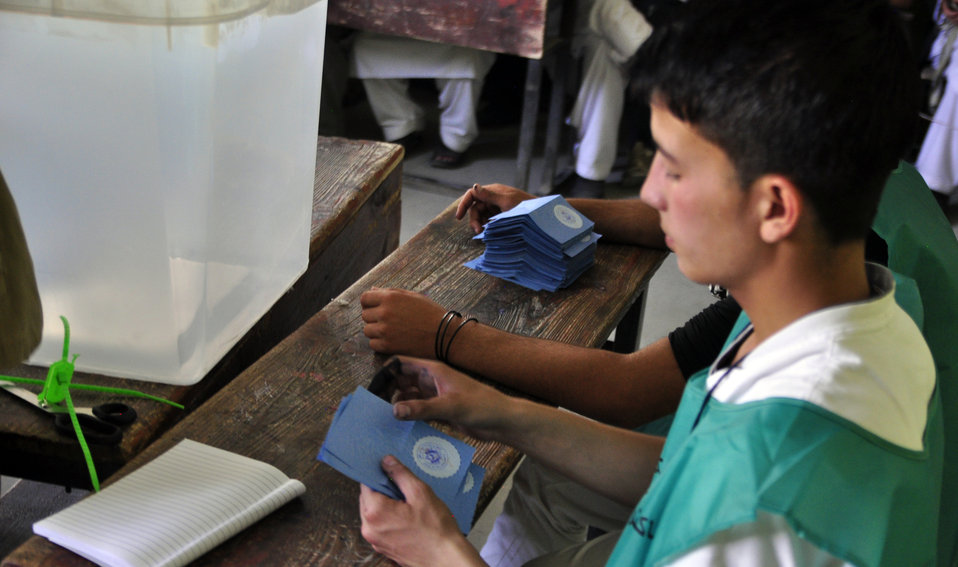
Workers of IEC count ballots at a polling center in Kabul.